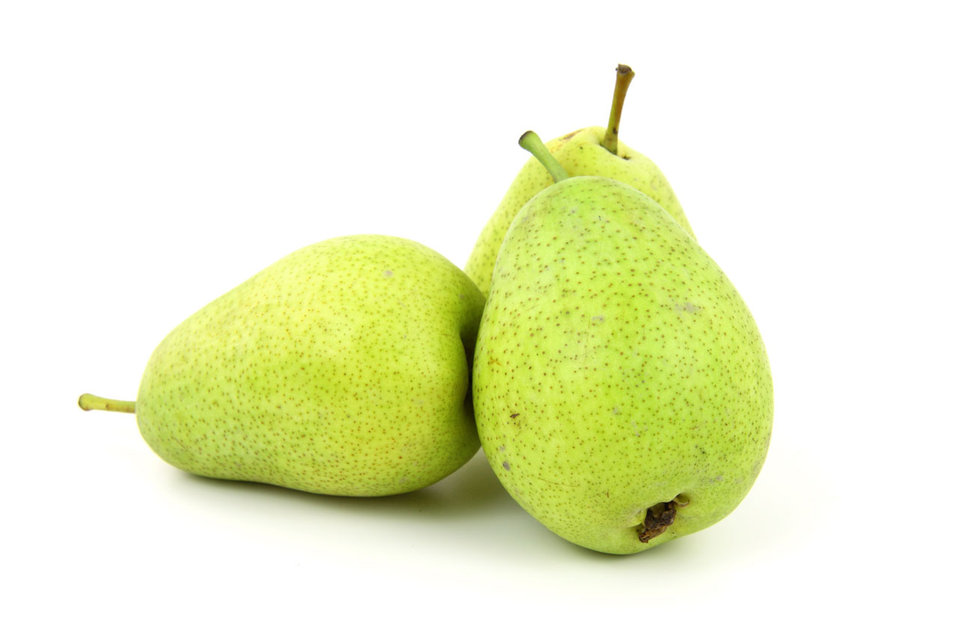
Pears

Fresh pears isolated on white background.